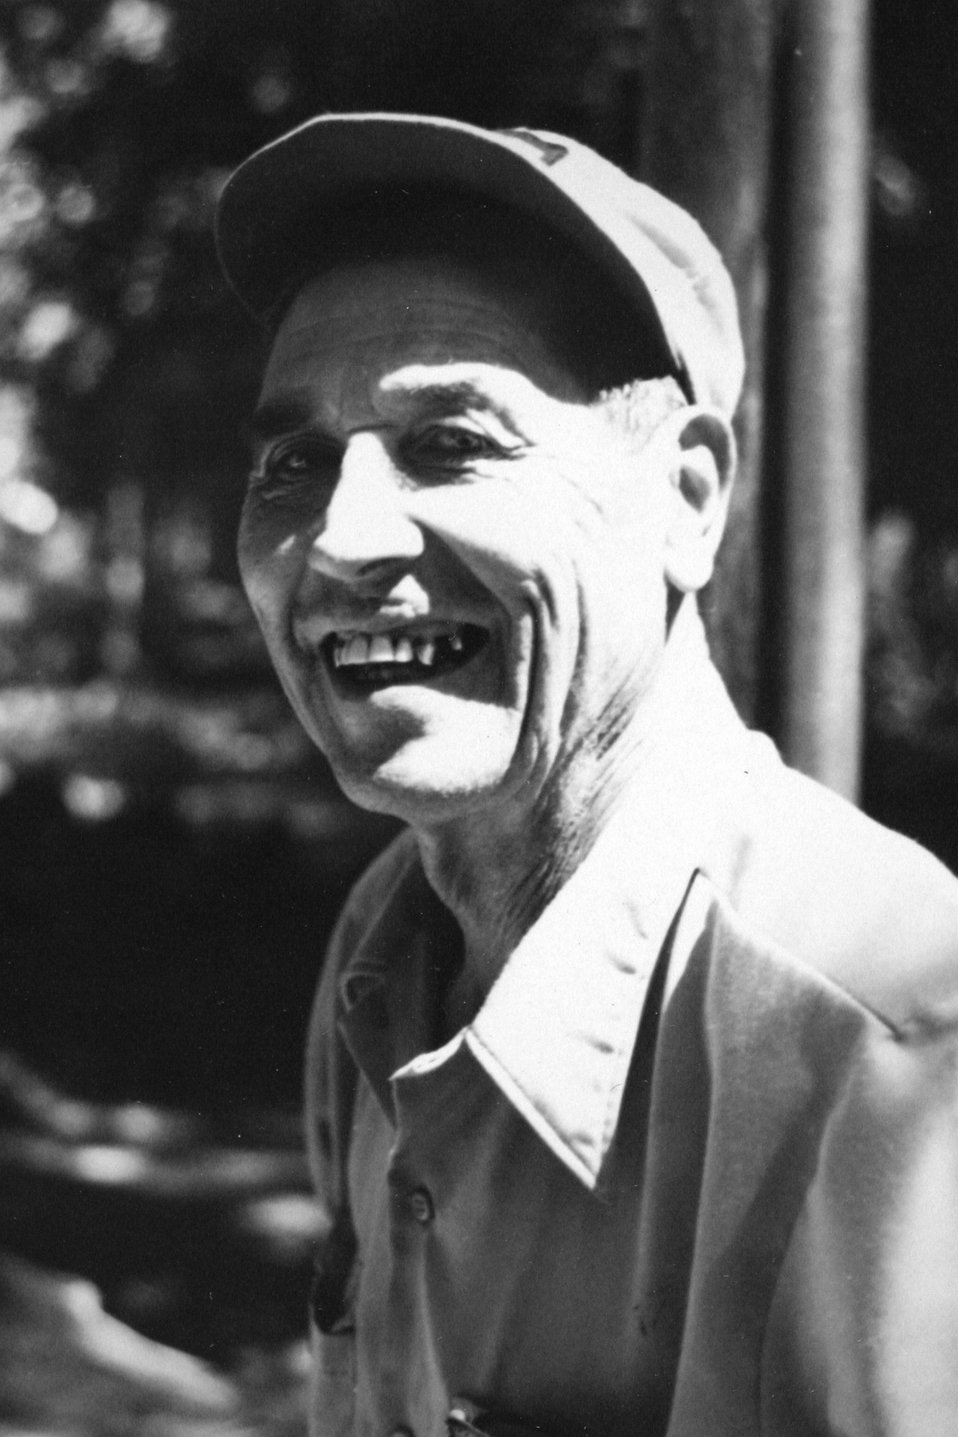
Elwin Frye